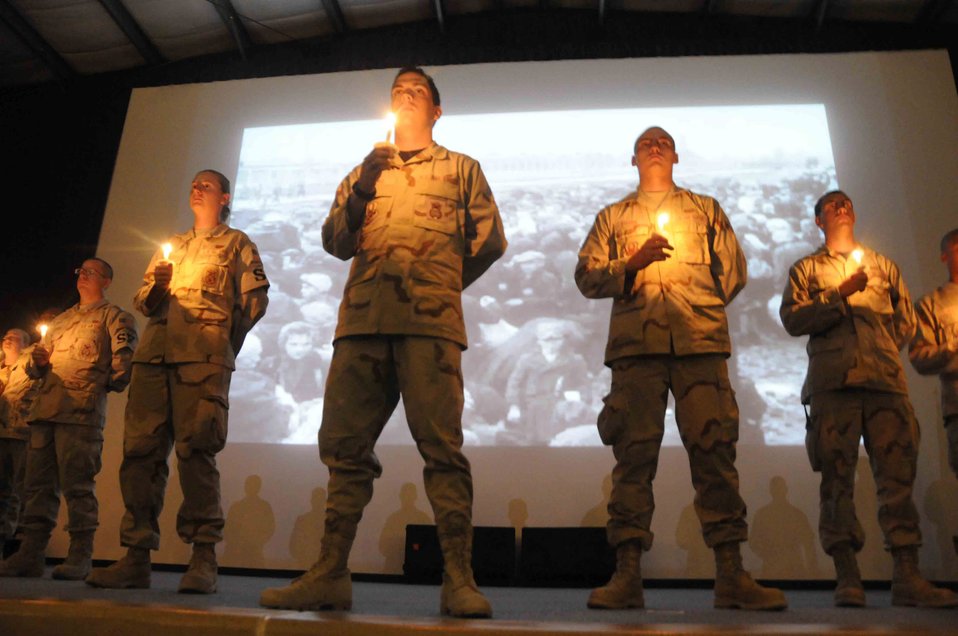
15th generation rabbi: Helping servicemembers keep faith

Deployed Airmen hold candles on stage as images of Holocaust victims are projected behind them May 2 at a Southwest Asian air base. More than 30 base members here participated in the Holocaust remembrance vigil to commemorate the more than 6 million lives lost during World War II.